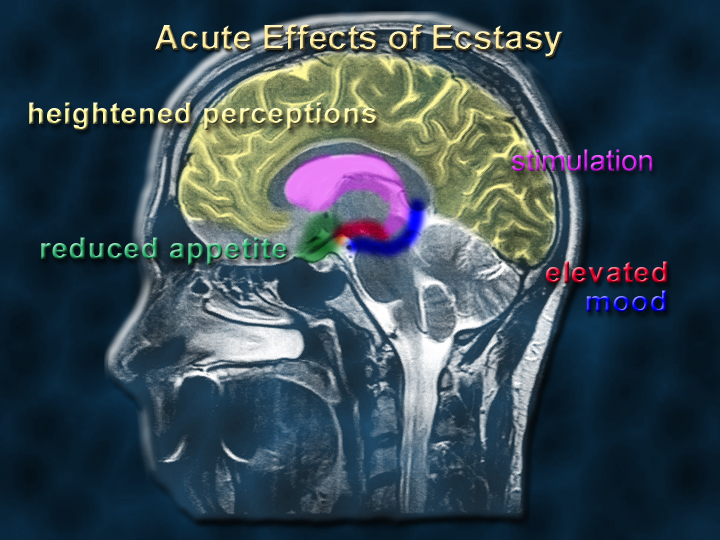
Ecstasy - acute effects

When a person uses ecstasy, the increase in serotonin in different brain regions causes psychological effects. These include elevated mood and feelings of empathy. The ecstasy is also reinforcing, which means that its pleasurable properties increase the likelihood that the person will take it again.
Many of the psychological effects of ecstasy are due to its actions within the limbic system (the amygdala, in red, and hippocampus, in blue, especially). The ability of ecstasy to produce mild stimulation is due to its actions in another part of the limbic system—the basal ganglia (in purple). It is here where ecstasy's effects on the dopamine system may be important. The heightened perceptions involve the actions of ecstasy in the neocortex (in yellow). Ecstasy can also reduce the appetite, because it acts in the hypothalamus (in green), which controls feeding behavior.